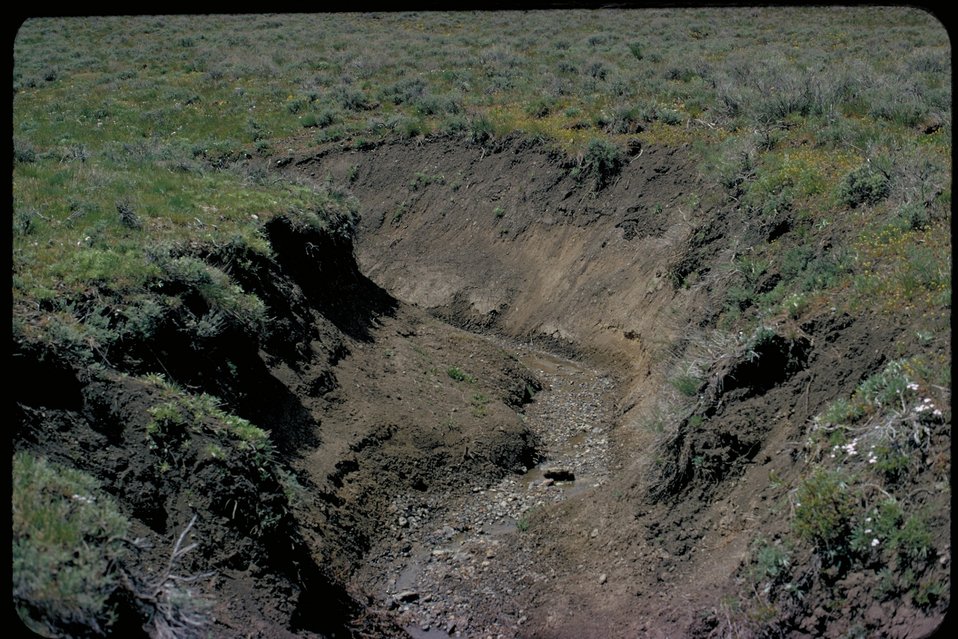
Gully Erosion Boise Front Four Rivers Field Office LSRD Lower Snake River District